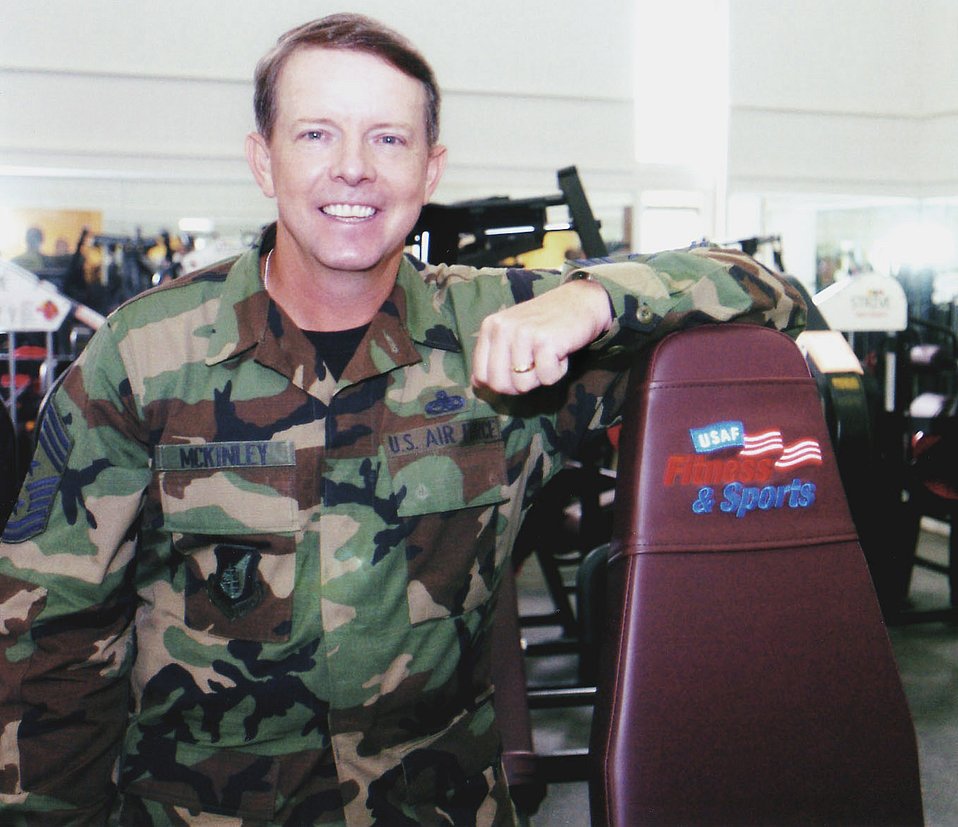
Next top enlisted chief focused on Air Force priorities

Chief Master Sgt. Rodney J. McKinley will assume his new post as the Air Force's 15th top enlisted leader July 1. He is the current command chief master sergeant for Pacific Air Forces.